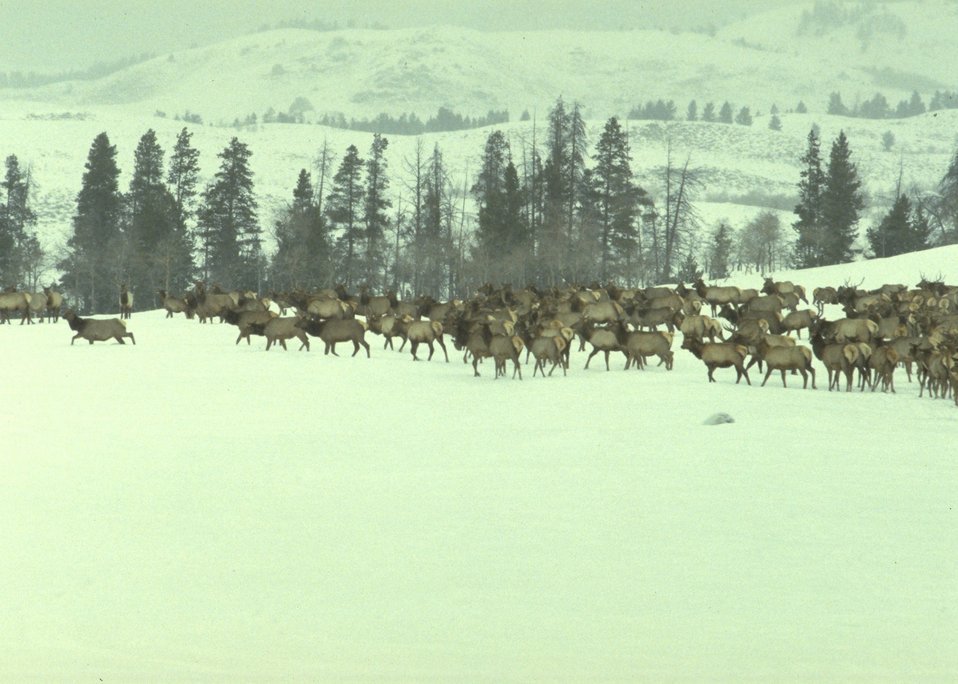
Herd of elk on a snowy range.